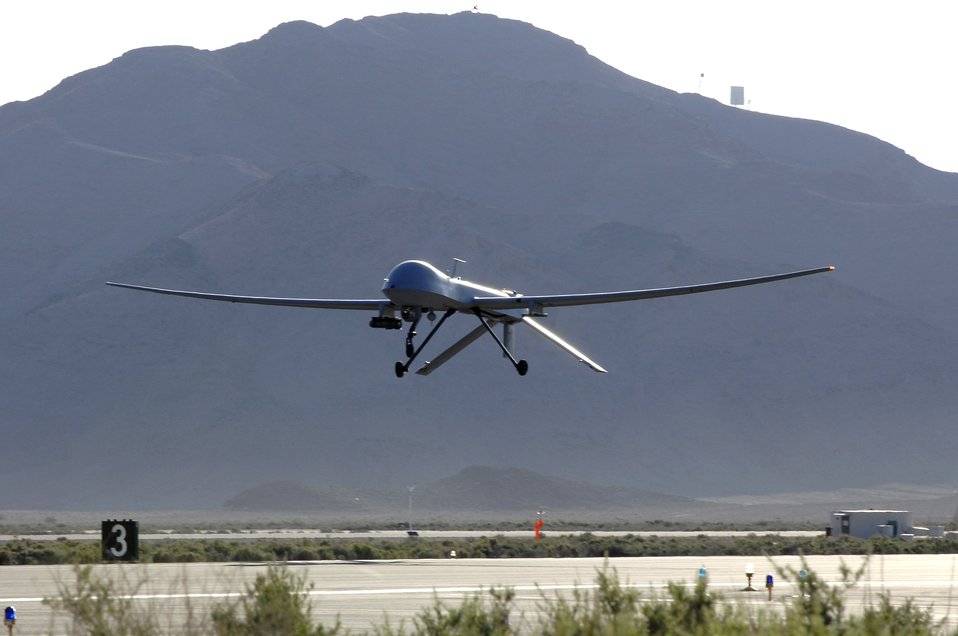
Predators ready to aid Missouri flood victims

An MQ-1 Predator unmanned aerial vehicle takes off from Creech Air Force Base, Nev., May 11, for a training sortie over the Nevada desert. Four Predators from the 432nd Wing are ready to deploy, if needed, to help in humanitarian relief efforts in Missouri.